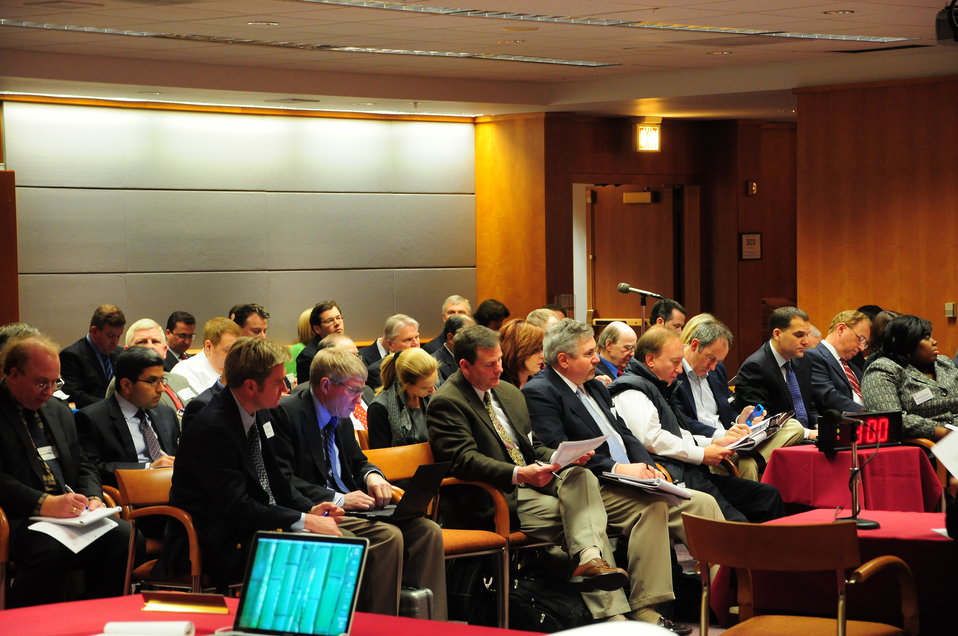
FCC ERIC Public Safety Workshop

ERIC: Public Safety Workshop; Commission Meeting Room; March 02, 2010